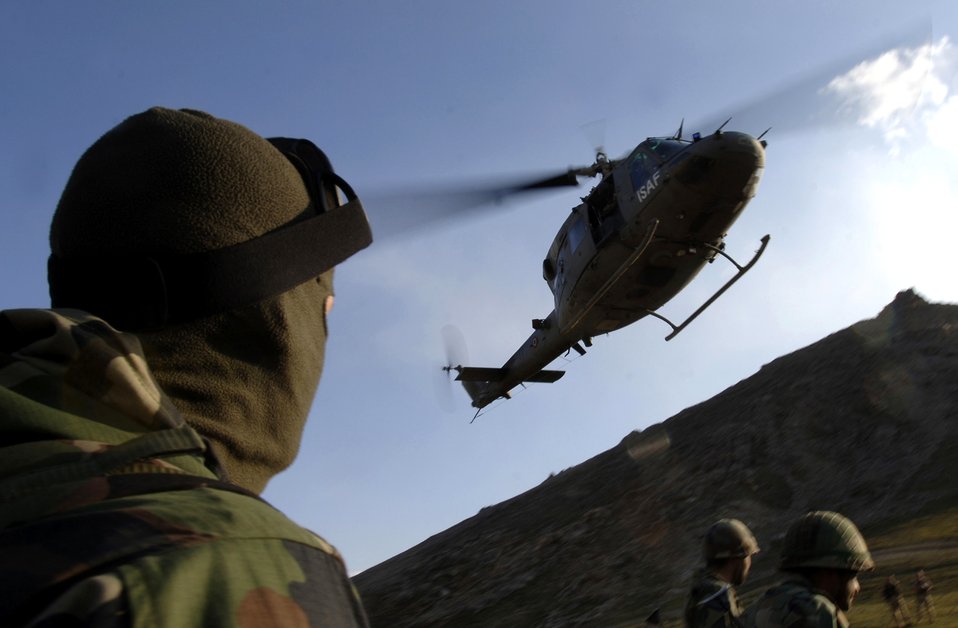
Coalition forces conduct, supervise training exercise

A French International Security Assistance Force member awaits the arrival of an Italian UH-60 helicopter March 15 supporting a medical evacuation exercise being held at the Kabul Military Training Center in Afghanistan. ISAF and DOD members help train ANA officer candidates on practical scenarios such as IED attacks, self-aid and buddy care and patient evacuation.